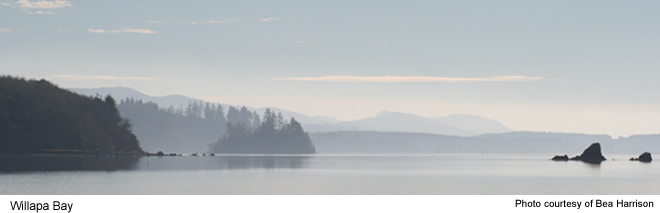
Willapa bay - Willapa NWR